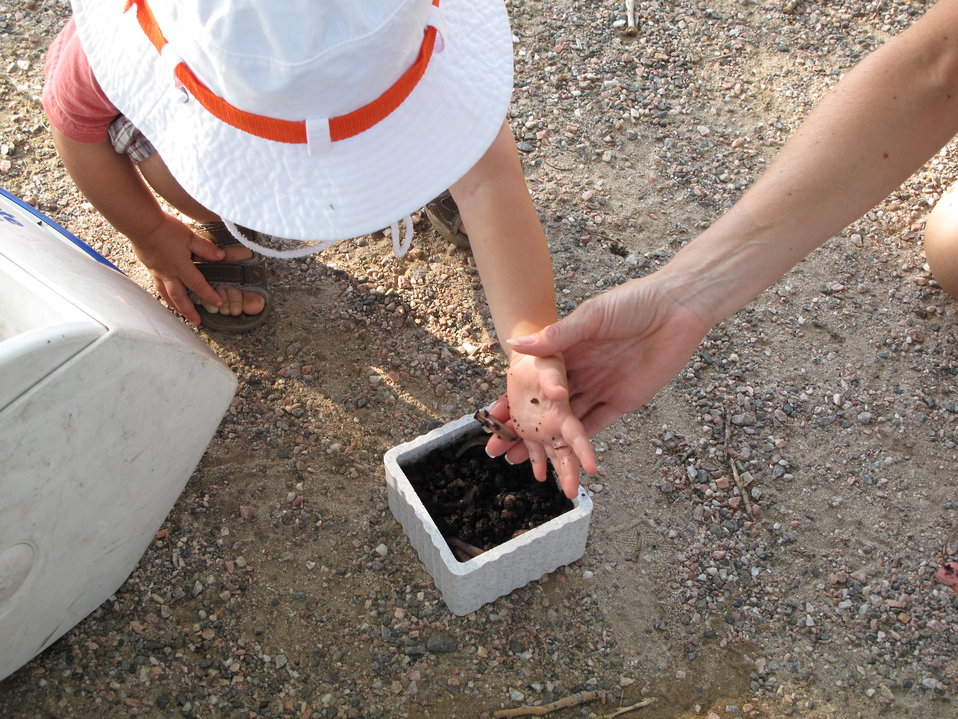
Youth

Exploring the wonders of worms!